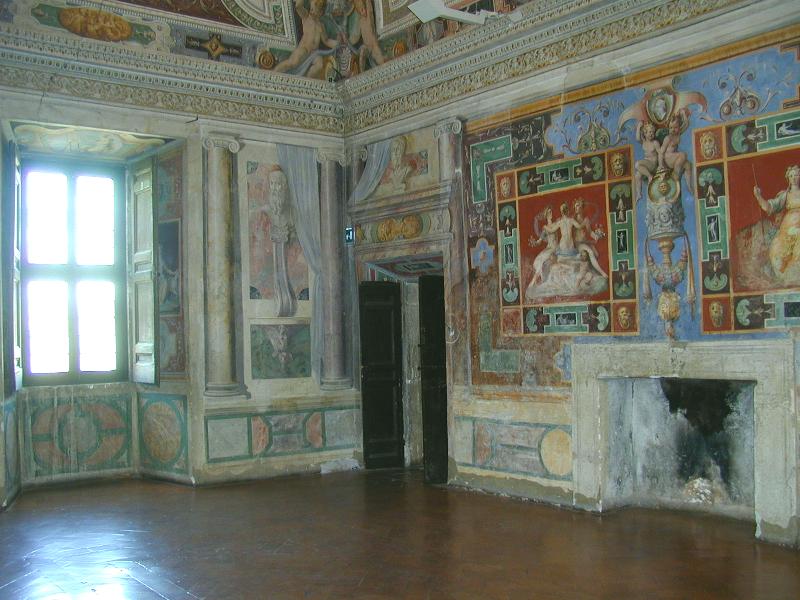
010609 06 villadeste